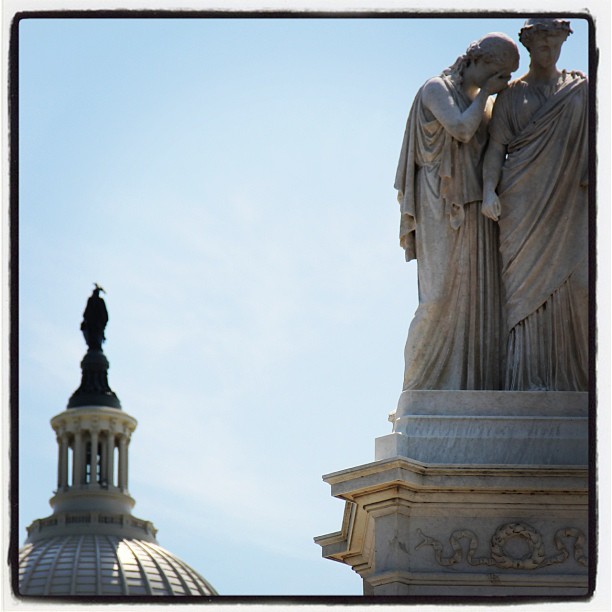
'They died that their country might live.' - Capitol Peace Monument inscription. #peaceday